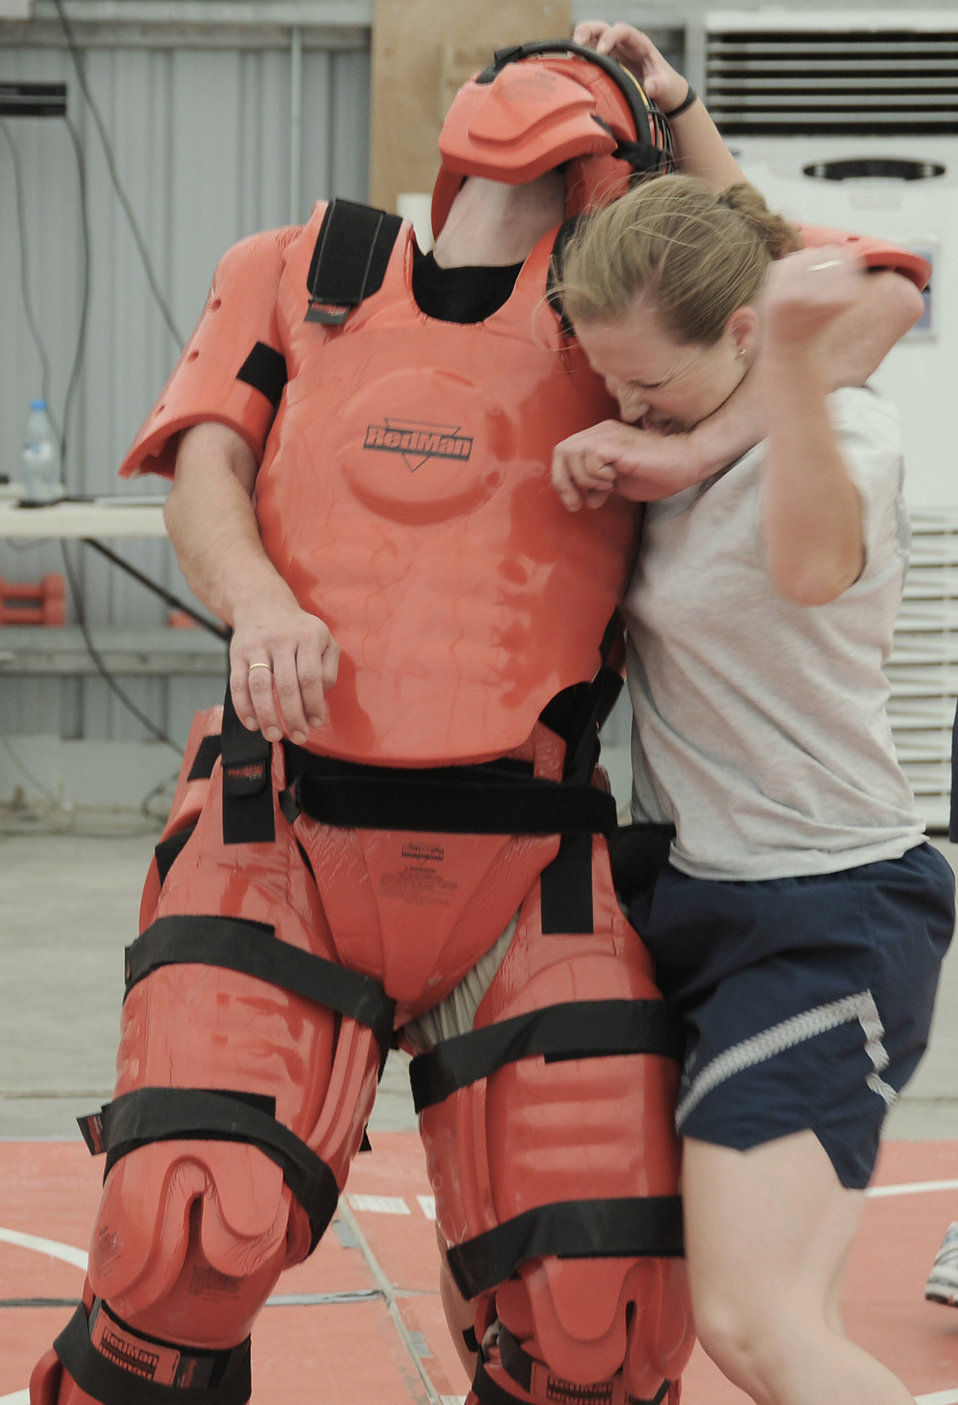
Getting defensive

Capt. Jennifer Pearson prepares to strike the